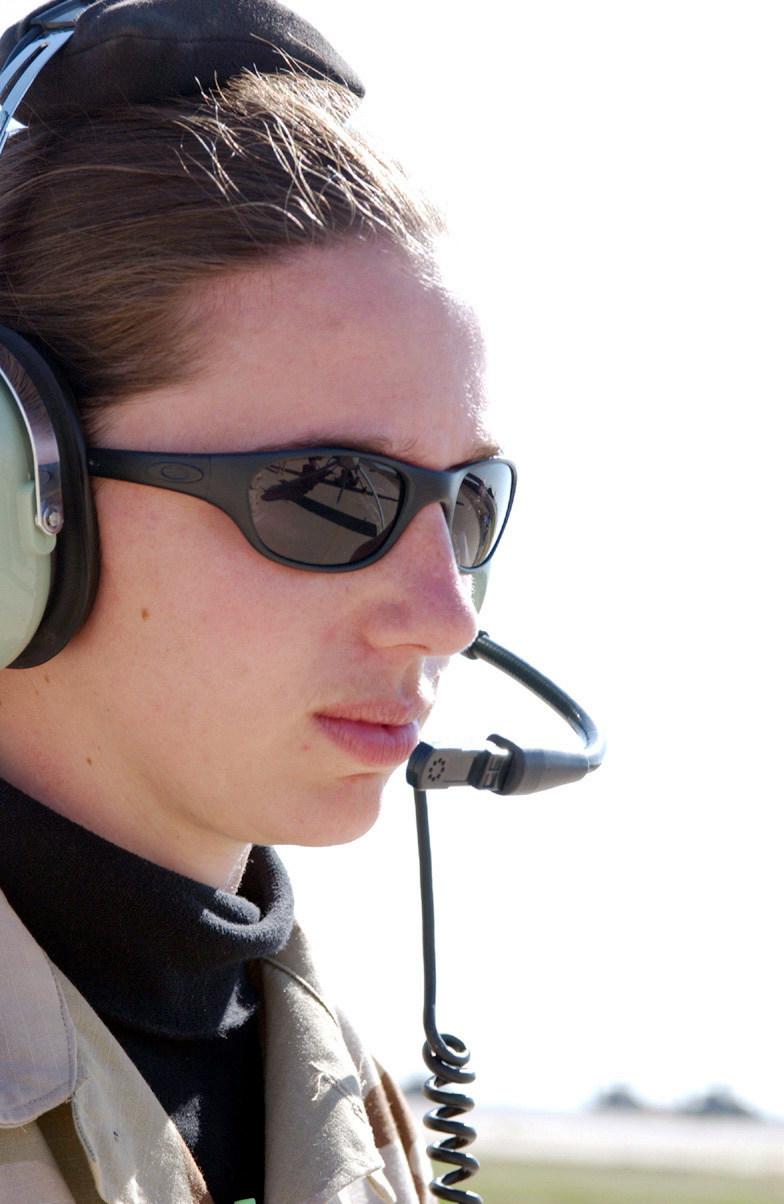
Predator

BALAD AIR BASE, Iraq -- Staff Sgt. Tracy Jones talks with the pilot of an RQ-1 Predator Unmanned Aerial Vehicle before it begins a mission supporting Operation Iraqi Freedom. Sergeant Jones is a crew chief with the 46th Expeditionary Reconnaissance Squadron here.